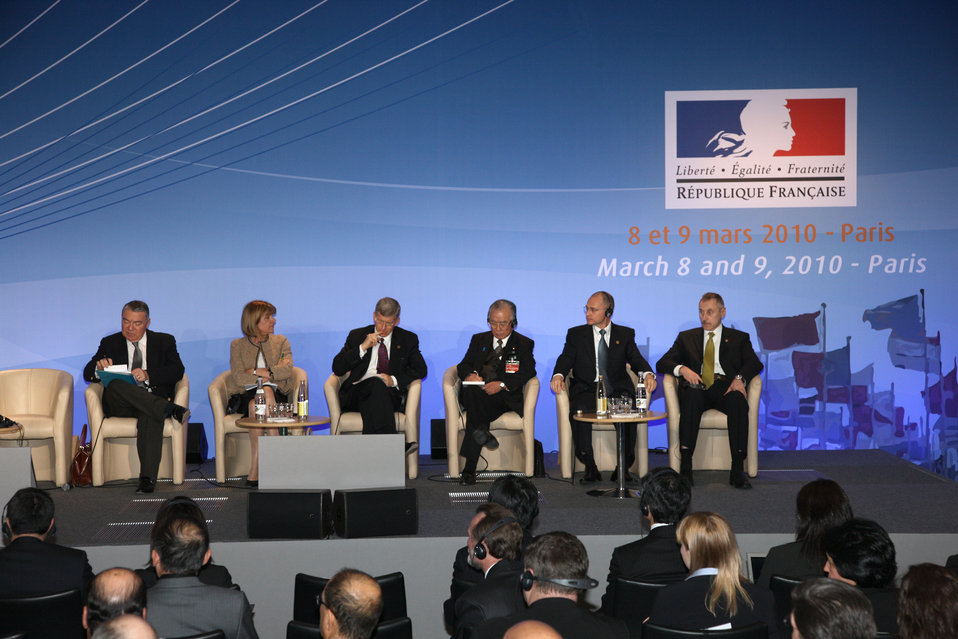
5C3K3799 copy